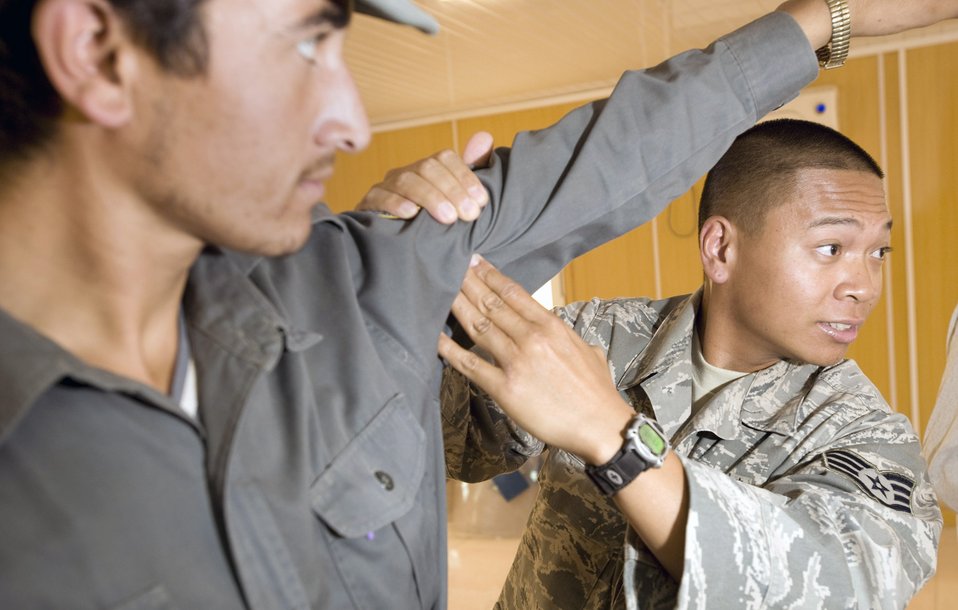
How to save a life

Staff Sgt. Nestor Albanos shows Afghan national police members how to stop bleeding during a Combat Life Savers course Aug. 12 at Qalat, Afghanistan. Sergeant Albanos, an Air Force medical technician is assigned to the Zabul Provincial Reconstruction Team and teaches the ANP and other Afghan forces lifesaving skills at the PRT compound.